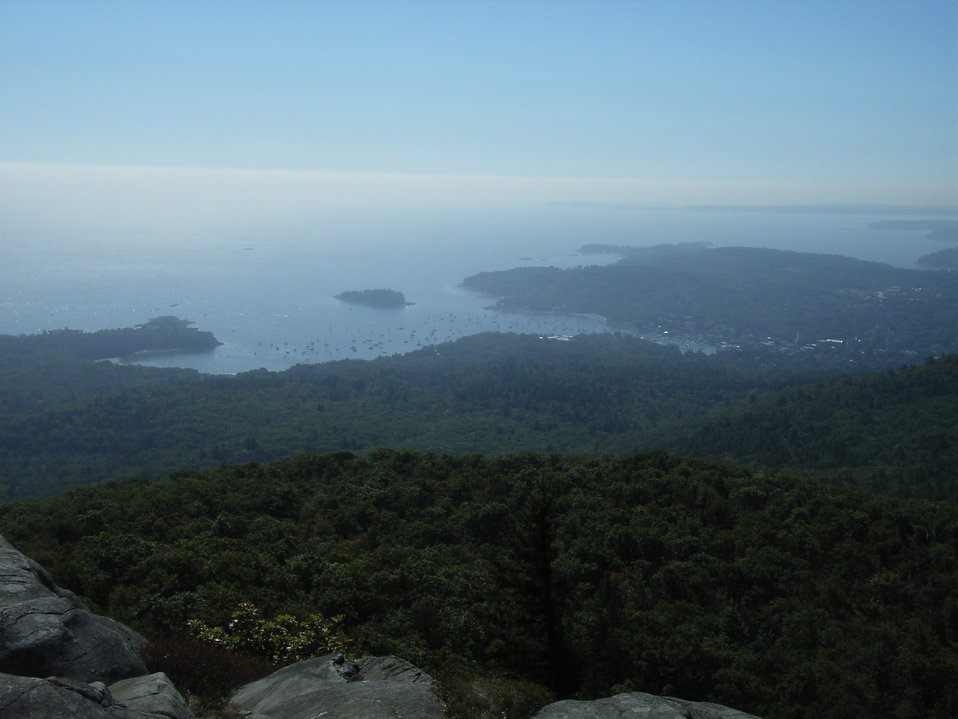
Camden, Maine, photographed from Ocean Outlook in Camden Hills State Park (on Megunticook Trail and Tablelands Trail) Deutsch: Camden, Maine, fotografiert vom Aussichtspunkt Ocean Outlook im Camden Hills State Park (gelegen an den Wanderwegen Megunticook Trail und Tablelands Trail)